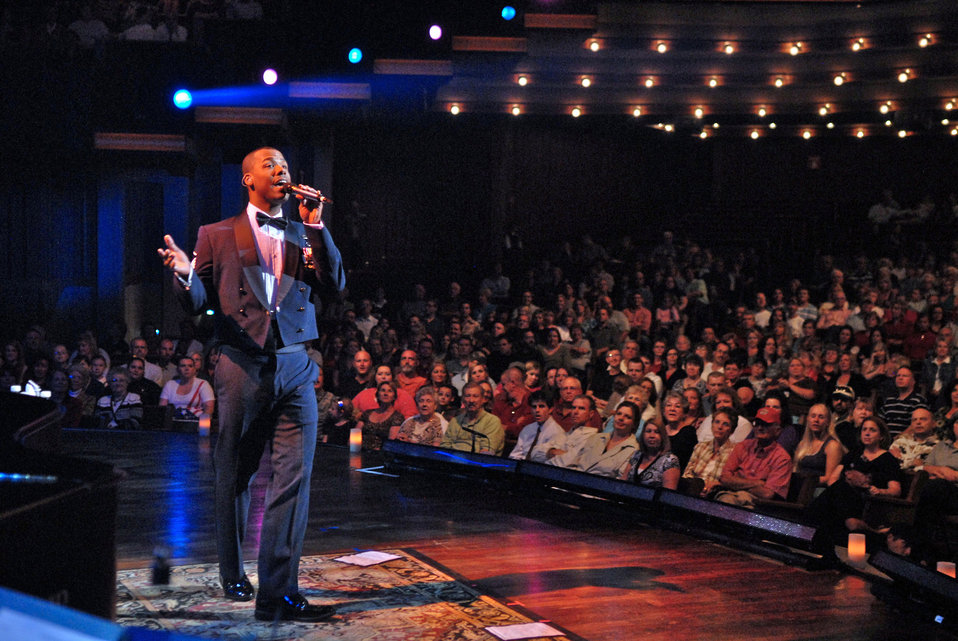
Wynonna Judd joins Reserve Band for TV broadcast

Master Sgt. Aaron Miles sings classic holiday songs to the audience during the 2008 Holiday Notes from Home concert recorded Dec. 9 in Nashville, Tenn. The concert is an annual holiday event recorded at the Grand Ole Opry House as a tribute to military men and women serving around the world. The show airs on Great American Country and on American Forces Network channels throughout December. Sergeant Miles is a Band of the Air Force Reserve vocalist.